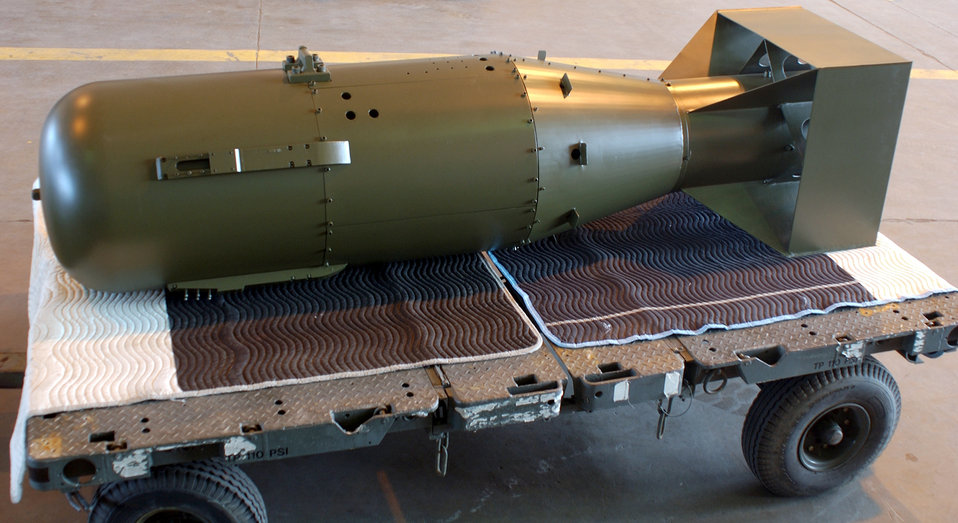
Atomic bomb returns to Air Force Museum

WRIGHT-PATTERSON AIR FORCE BASE, Ohio -- A